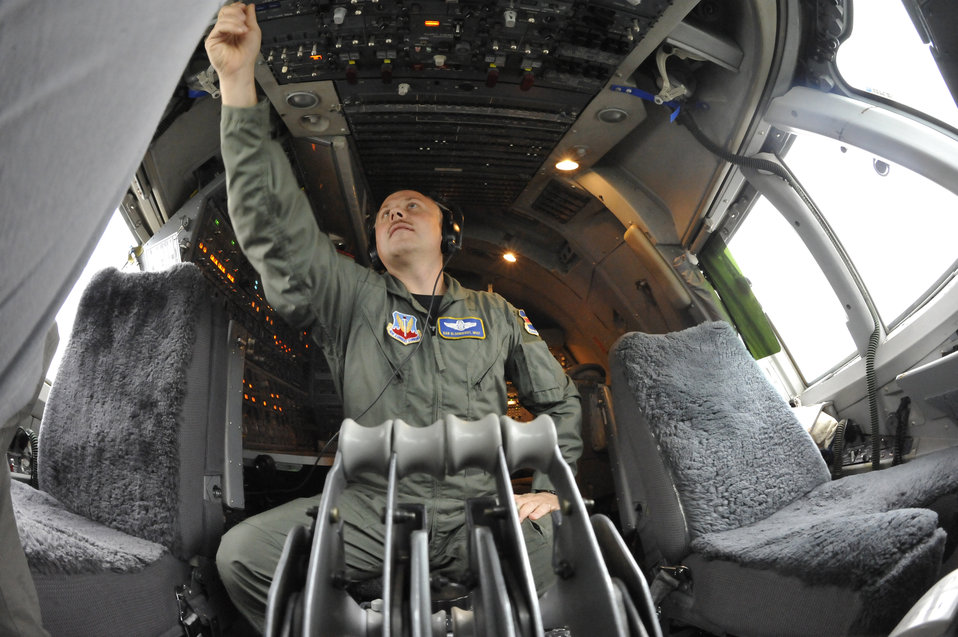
E-4B milestone

Master Sgt. Dan Bloomquist, a flight engineer with the 1st Airborne Command and Control Squadron at Offutt Air Force Base, Neb., preps an E-4B for flight during a simulated alert mission. The E-4B serves as the National Airborne Operations Center for the president, secretary of defense and chairman of the Joint Chiefs of Staff. The aircraft passed a significant milestone this month by sitting alert constantly for more than 35 years.